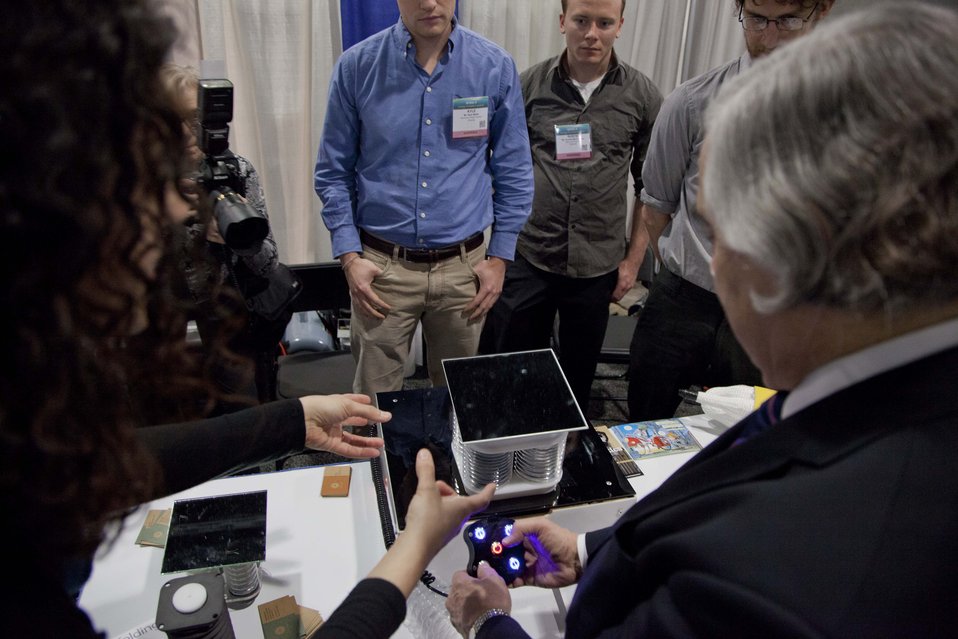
Energy Secretary Moniz checks out Sunfolding an innovative solar technology launched by ARPA-E awardee Otherlab. Sunfolding offers a novel approach to the design of heliostats -- the mirror devices used to reflect sunlight as part of a concentrating solar power system. Sunfolding’s heliostats are made with cheap, easily accessible materials like soda bottles and have the potential to dramatically reduce costs associated with concentrating solar power technologies.